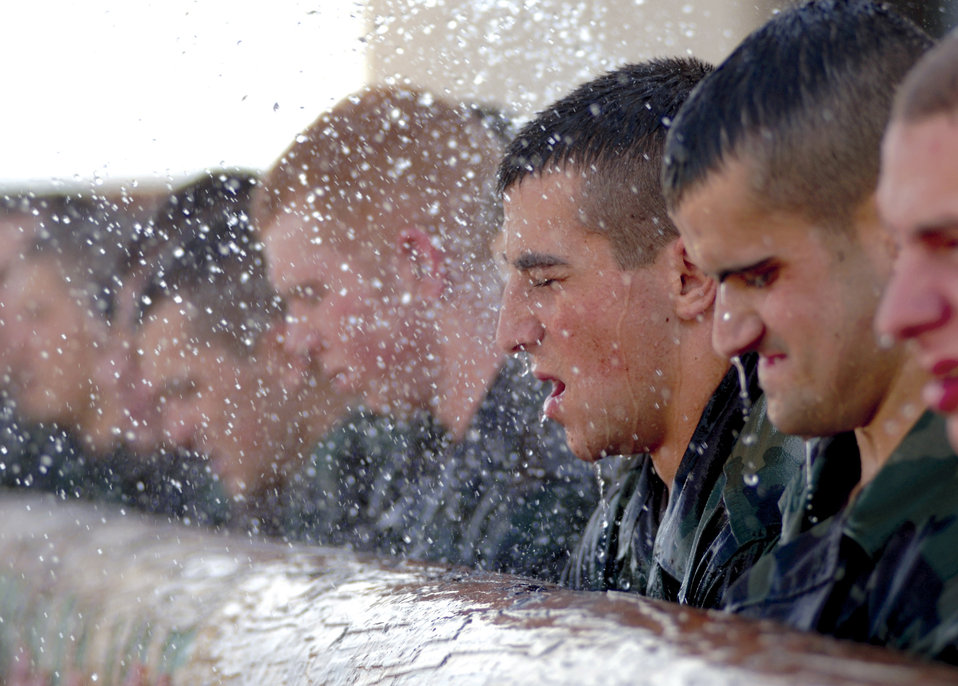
PJ training

Pararescue trainees get soaked by cadres as they try to follow orders and carry the painfully heavy training log during their extended training day at the Pararescue indoctrination training course at Lackland Air Force Base's Medina Annex, Texas. PJ indoc is the first hurdle of intense physical and mental training for Pararescue trainees. This course prepares them for the multitude of pipeline training they must endure to become US Air Force Pararescue members.